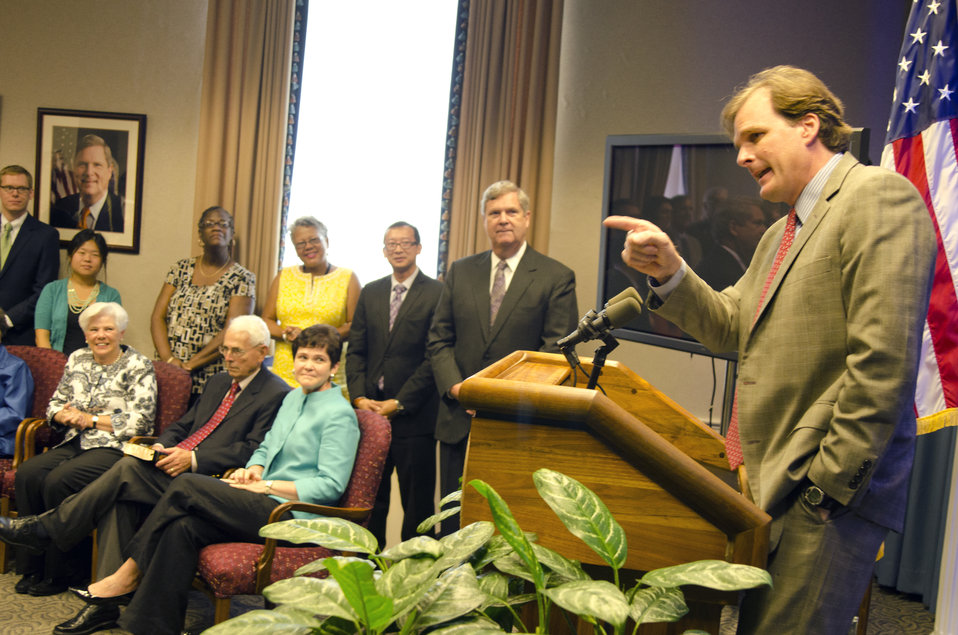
Agriculture Secretary Tom Vilsack listens as U.S. Department of Agriculture (USDA) Under Secretary for Natural Resources and Environment (NRE) Robert Bonnie makes remarks at his swearing in ceremony at USDA in Washington, D.C. on Monday, Aug. 12, 2013.